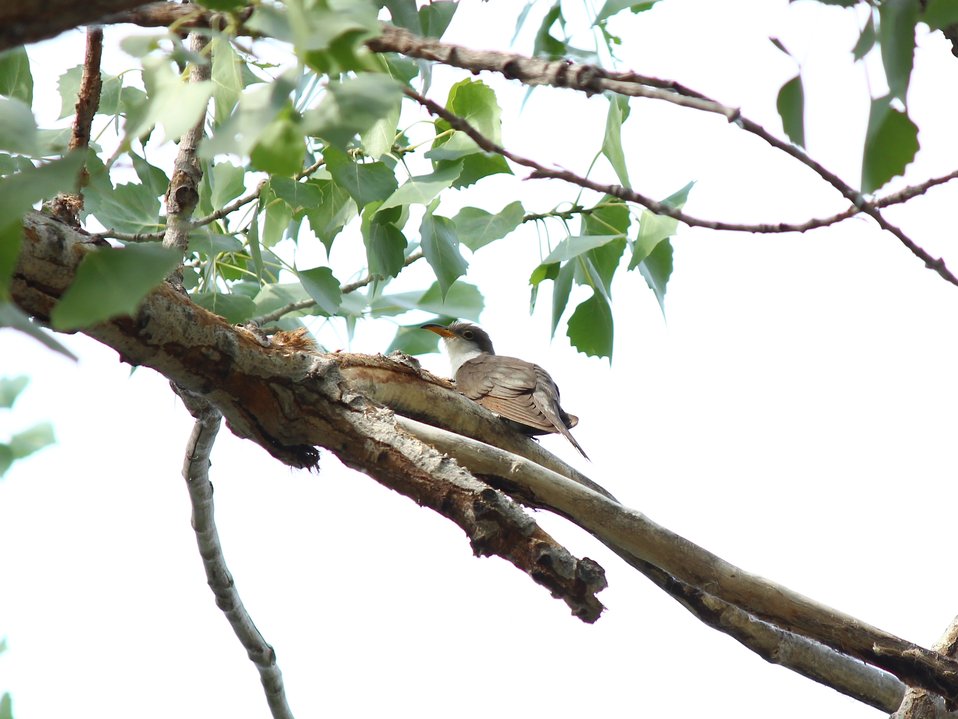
Western yellow-billed cuckoo

Grand Junction Wildlife Area along Gunnison River. Creed Clayton / USFWS.